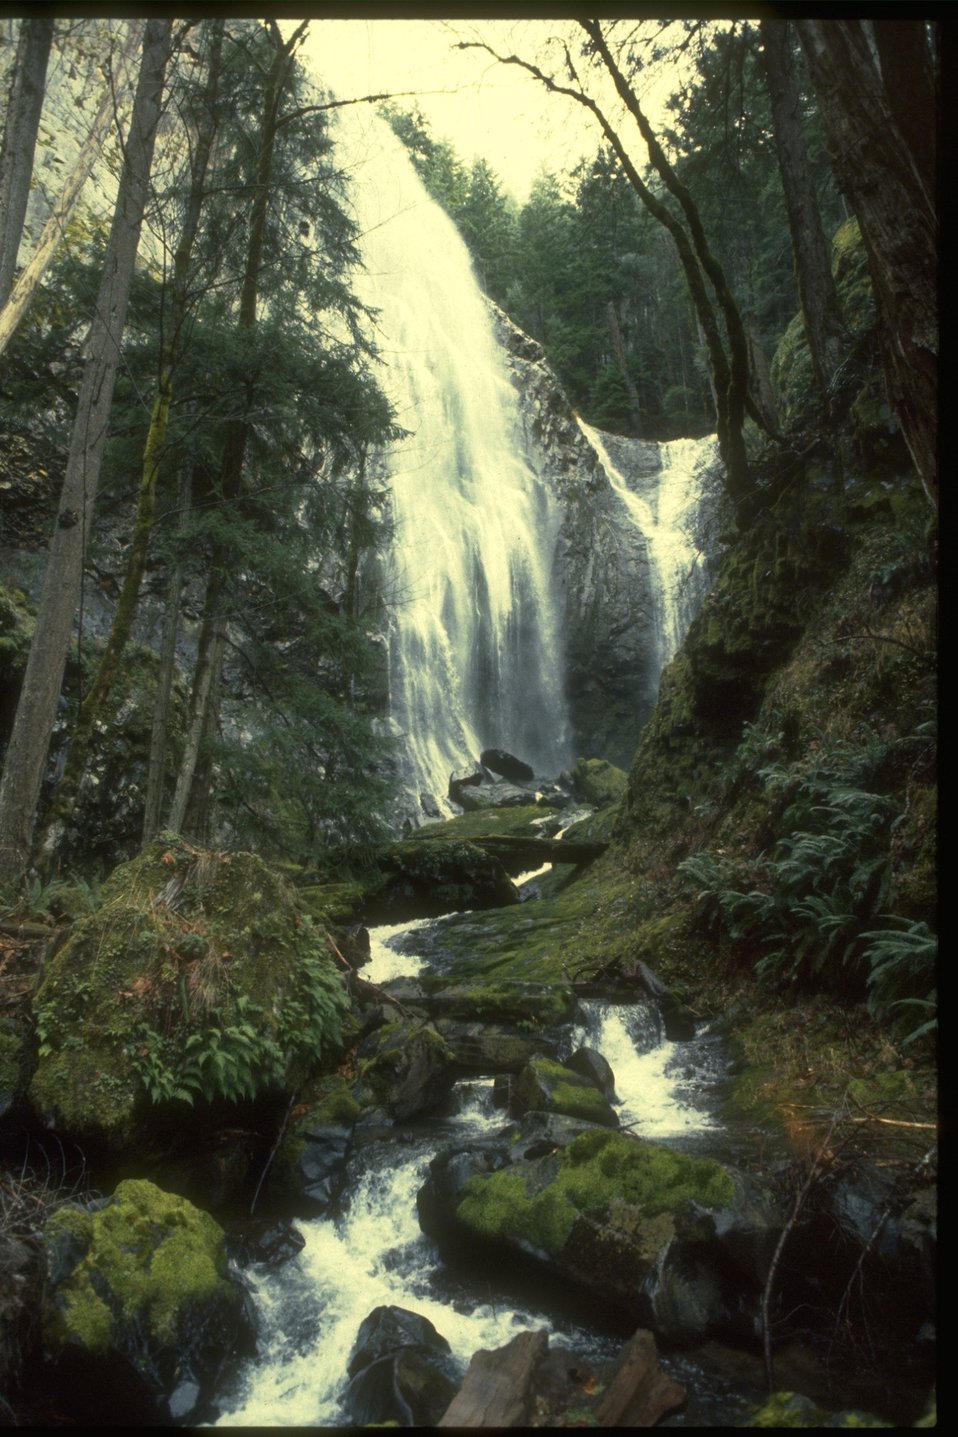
Upper Susan Creek Falls.